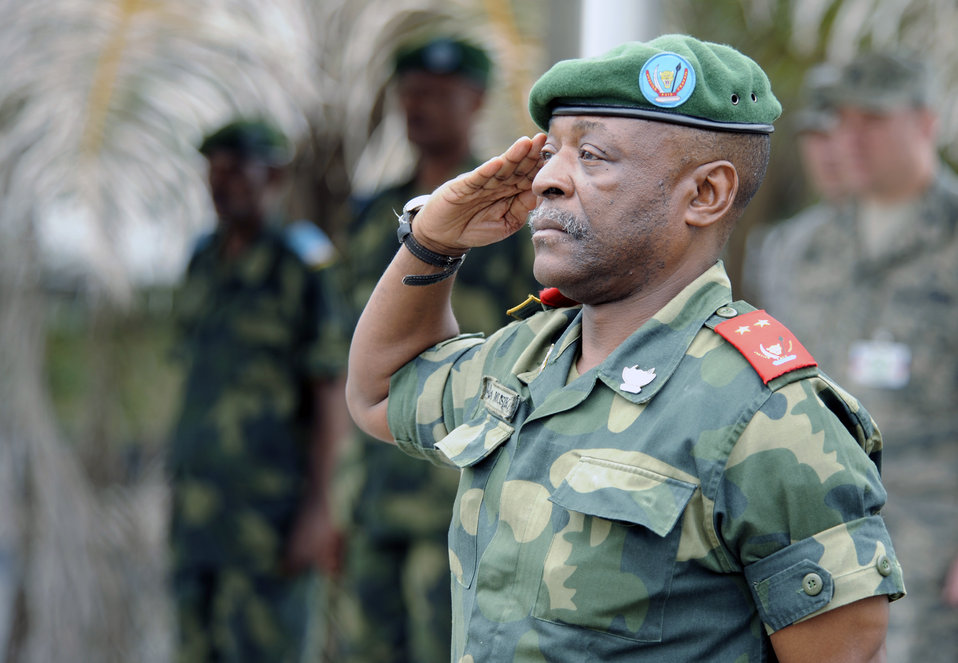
MEDLITE 11

Congolese Maj. Gen. Marcellin Lukama Musikami salutes members of the Democratic Republic of the Congo military police force before the opening ceremonies for the MEDLITE 11 exercise April 25, 2011, in Kinshasa, Democratic of the Congo. MEDLITE 11 is a joint medical exercise focused on aeromedical evacuation, to improve the readiness of U.S. Air Force and DRC personnel.